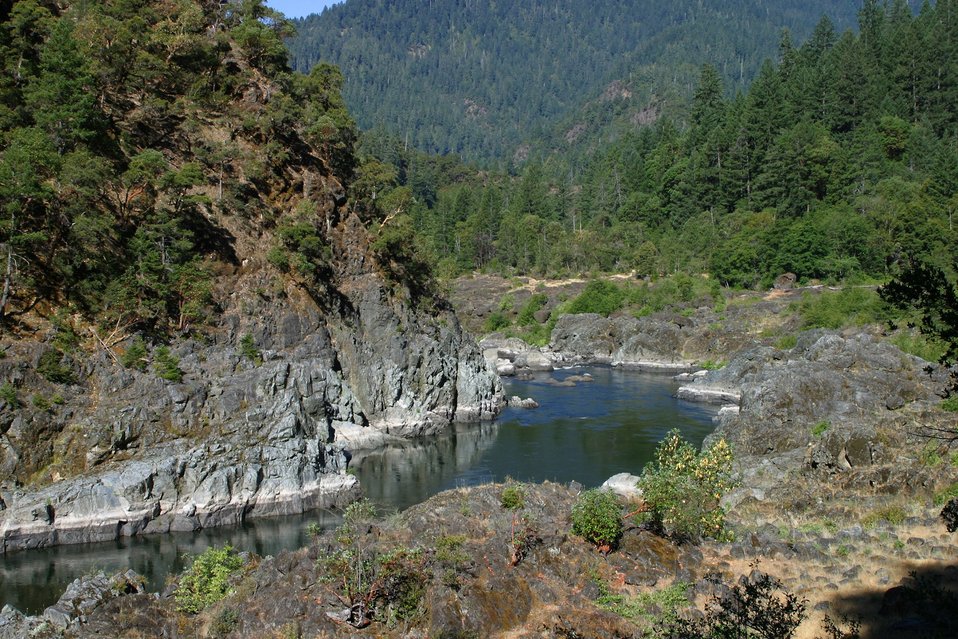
Looking down river toward the head of Blossom Rapids.